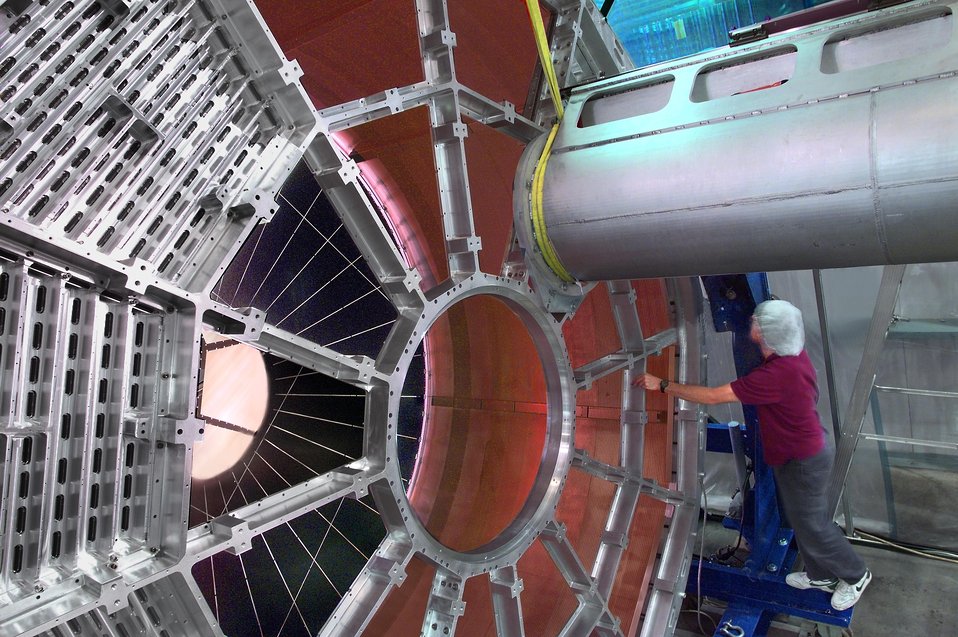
Relativistic Heavy Ion Collider (RHIC) at Lawrence Berkeley National Laboratory.

The STAR (Solenoidal Tracker at RHIC, Relativistic Heavy Ion Collider), is a massive detector system for studying types of subatomic particles called hadrons. The RHIC built at Brookhaven National Lab. The STAR collaboration includes nearly 200 scientists and engineers from 26 institutions around the world.